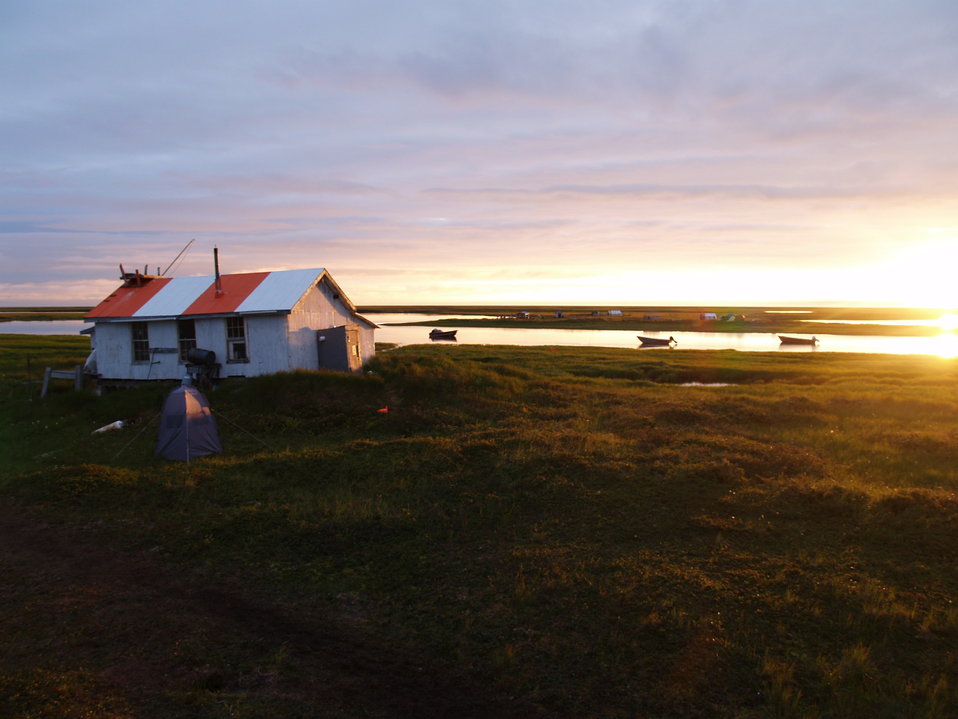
Sunset at Old Chevak

USFWS Yukon Delta NWR